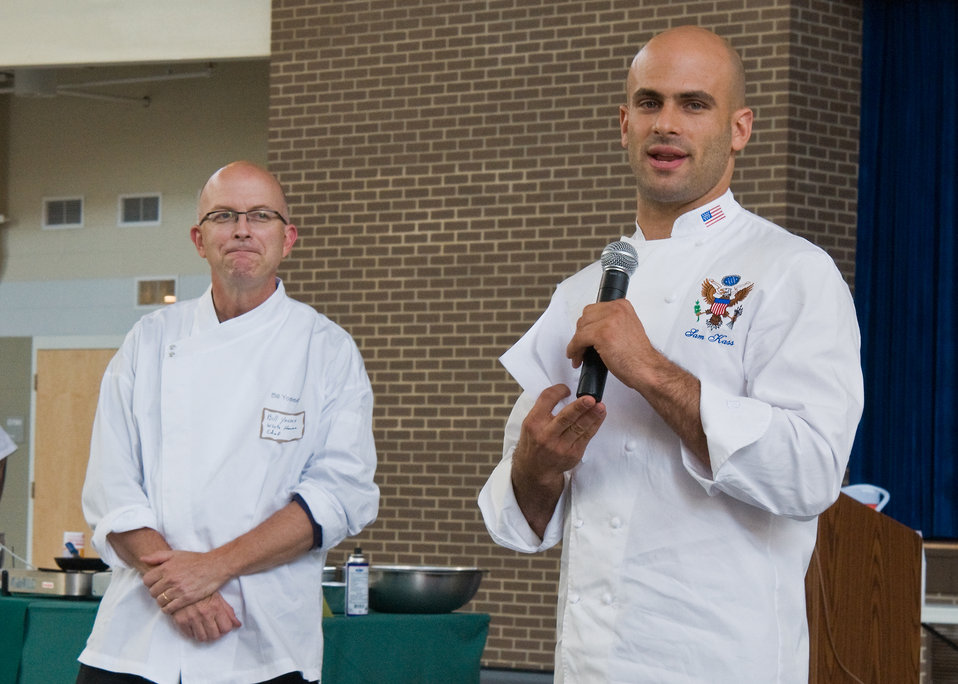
Chef Sam Kass (right), White House Assistant Chef and Senior Policy Advisor for Healthy Food Initiatives and Chef Bill Yosses (left), White House Chief Pastry Chef introduce the Chef Competition of the D.C. Farm to School and D.C. School Garden Week at the Savoy Elementary and Thurgood Marshall Academy shared campus in Washington, DC, Tuesday, October 12, 2010. At the event related to the Iron Chef competition local chef’s and student sous chef’s created healthy, delicious recipes using local apple varieties to be judged by the students themselves. Schoolchildren and a partnership of community organizations have responded to First Lady Michelle Obama’s goal to end childhood obesity by building school gardens, providing healthier foods in school meals, and helping kids connect with local food and agriculture. USDA Photo 10di1522-29 by Bob Nichols.